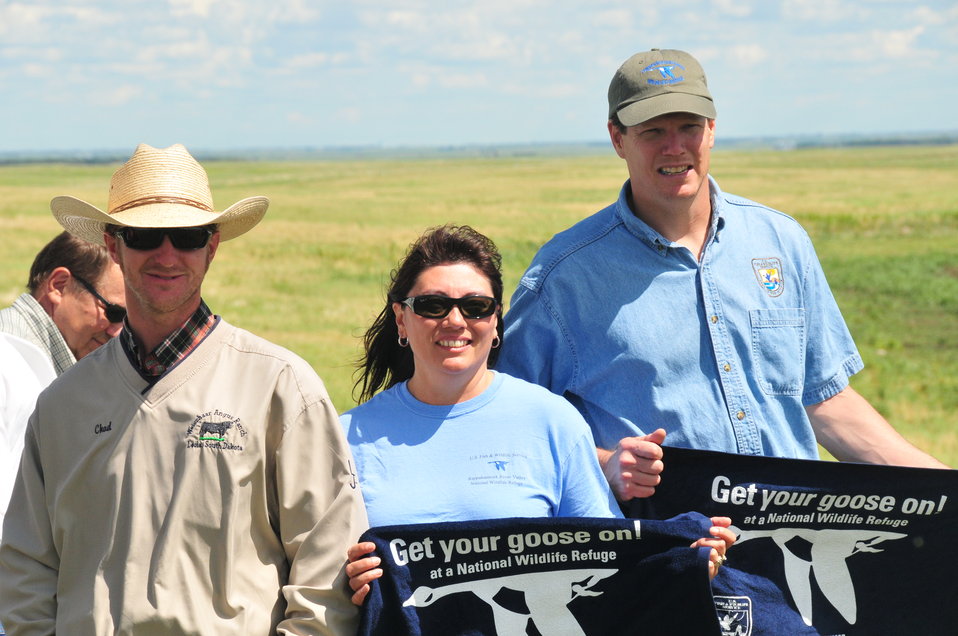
Get Your Goose On!

The national meeting for regional chiefs of the National Wildlife Refuge System is held three times a year in different locations around the country. This 2012 meeting took place in McPherson County, South Dakota, and focused on the Dakota Grassland Conservation Area.

This photo was taken on the Wade Weiszharr and Family Ranch, which contains perpetual U.S. Fish and Widlife grassland and wetland easements. This site is also located in the heart of Prairie Pothole Region, making it extremely productive migratory bird habitat and a great place to “Get your goose on!”

In this photo rancher Chad Weiszhaar, Cynthia Martinez, and David Viker 'get their goose on' in the beautiful landscape of Wade Weisszhauer Ranch.